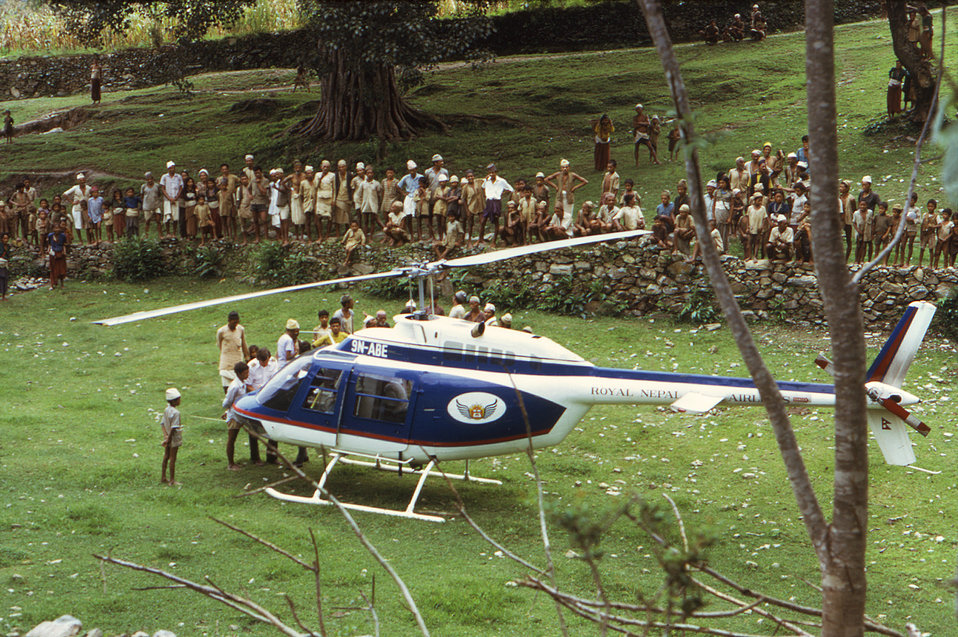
This 1974 image captured in In the Gunsi village developmental committee (VDC) of the Ramechhap District of Nepal, depicted the landing of a Royal Nepal Airlines helicopter, which was in the process of transpoting smallpox eradication workers into this remote region.